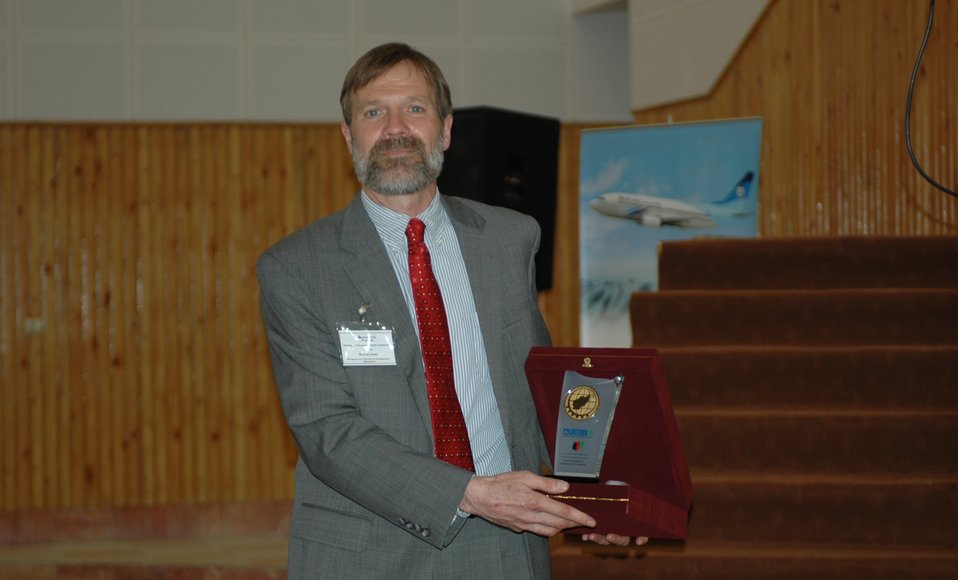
USAID's Michael Greene from RC West